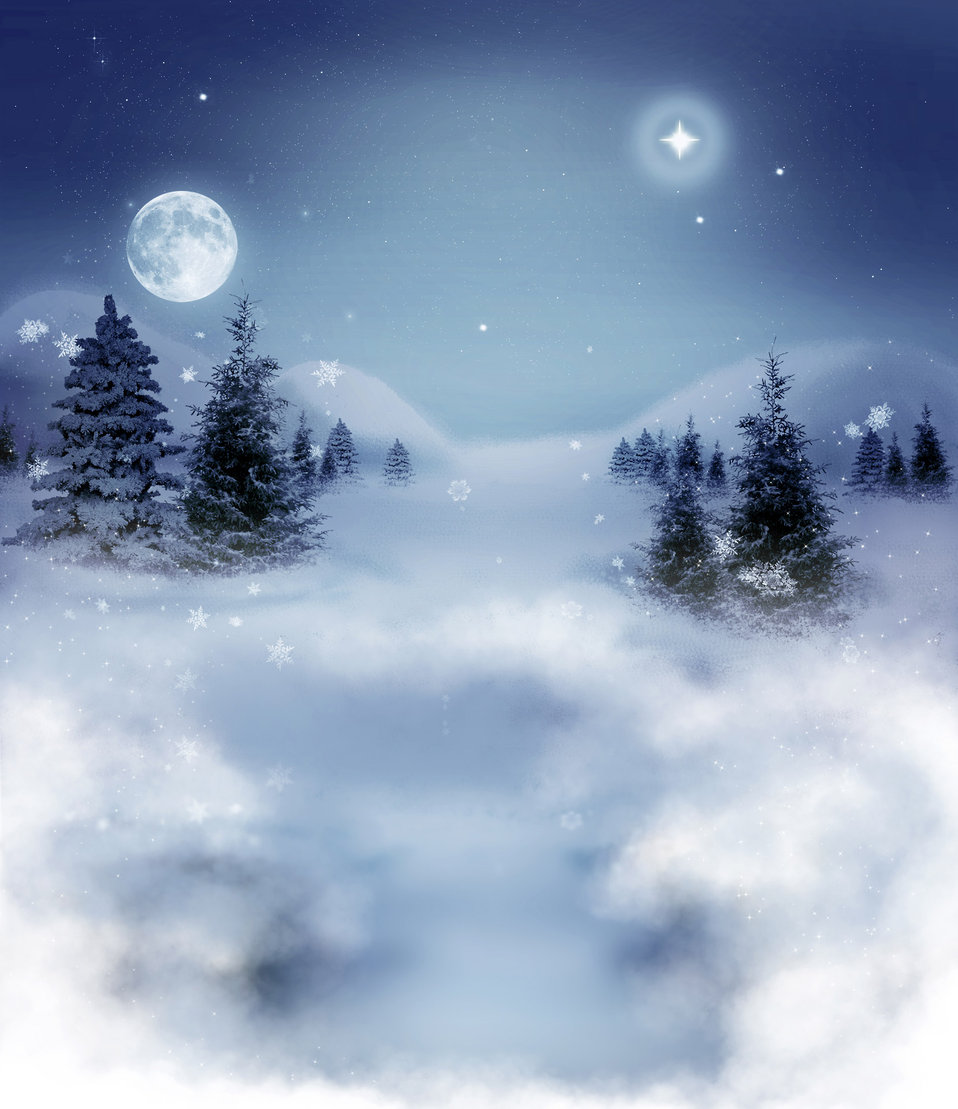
Winter landscape

Illustration of a winter landscape. christmas..